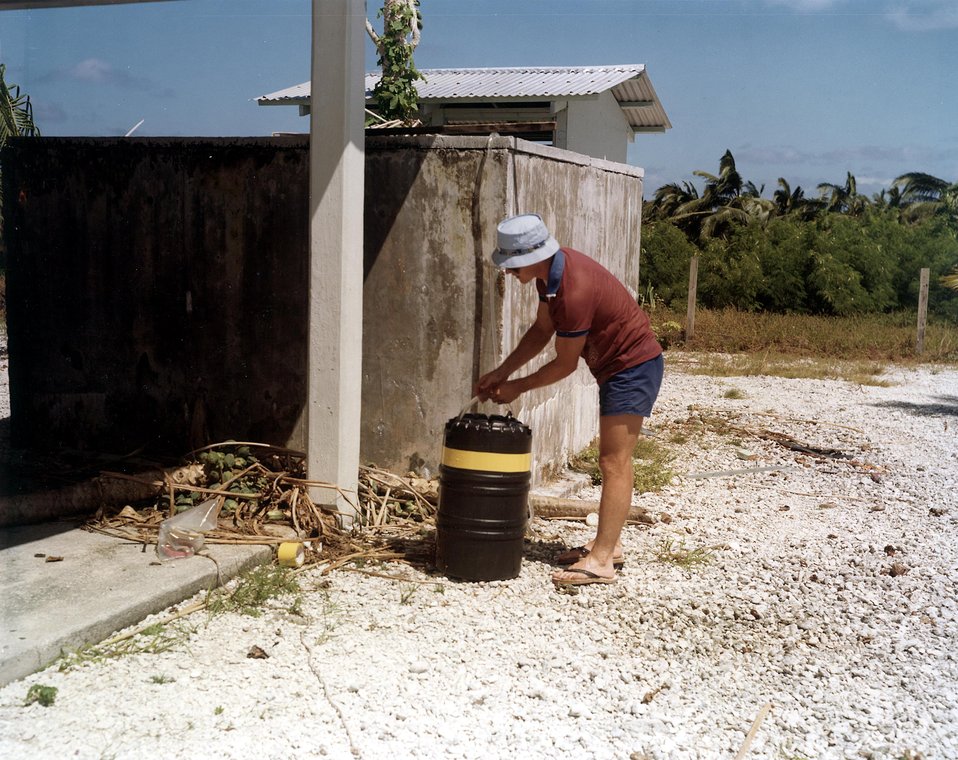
Construction activities at the Joseph M. Farley Power Plant.